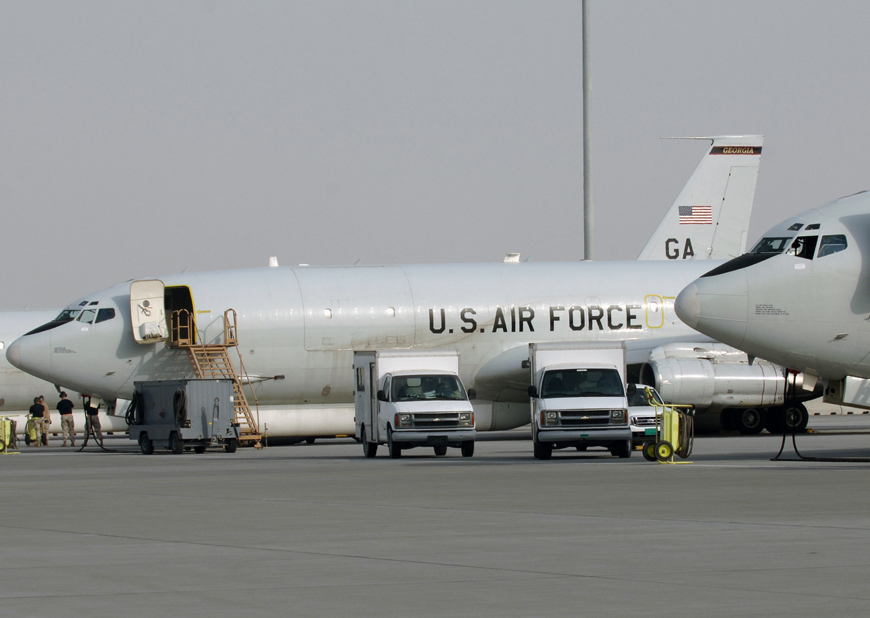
JSTARS missions

The 128th Expeditionary Air Command and Control Squadron Joint STARS have been flying missions over Iraq from the 379th Air Expeditionary Wing since 2003.